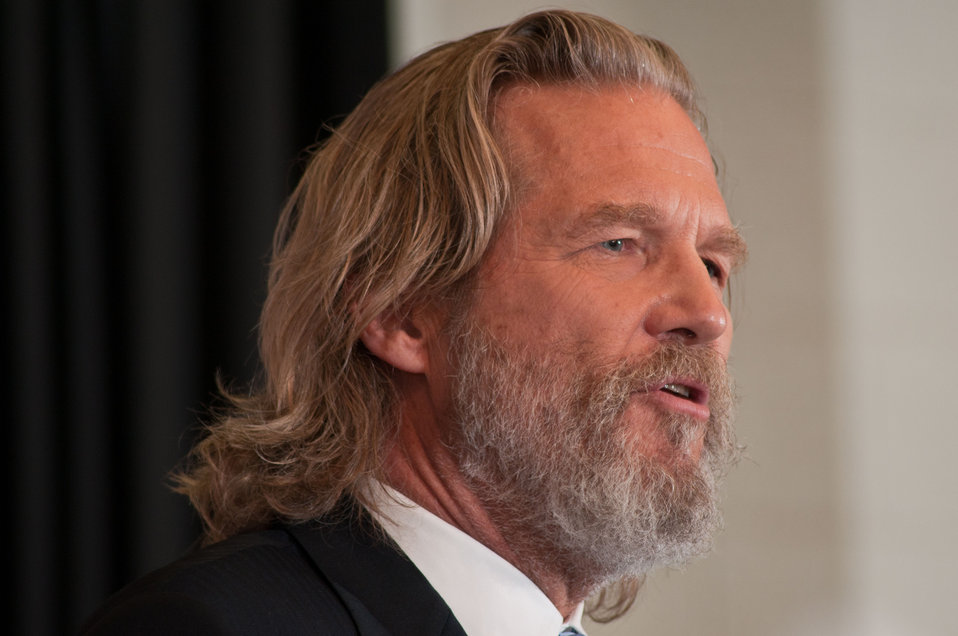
Academy Award Winner and No Kid Hungry National Campaign Spokesperson Jeff Bridges helped launch the Virginia No Kid Hungry Campaign at Barcroft Elementary School in Arlington, VA, on Tuesday, June 7, 2011.